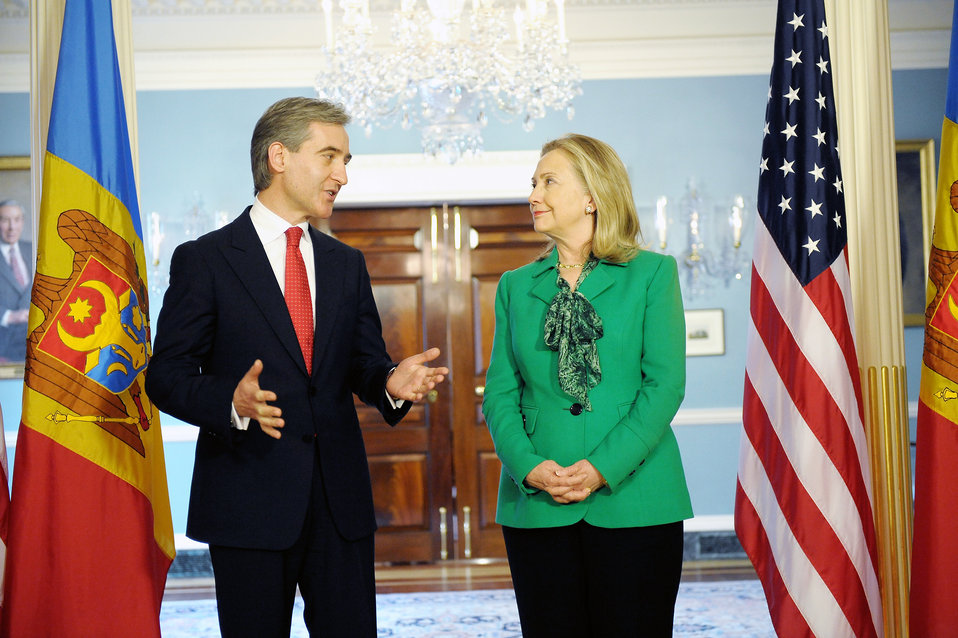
Secretary Clinton Meets With Moldova Deputy Prime Minister Leanca

U.S. Secretary of State Hillary Rodham Clinton meets with Deputy Prime Minister and Minister of Foreign Affairs and European Integration Iurie Leanca of the Republic of Moldova at the Department of State in Washington, D.C. on March 20, 2012.